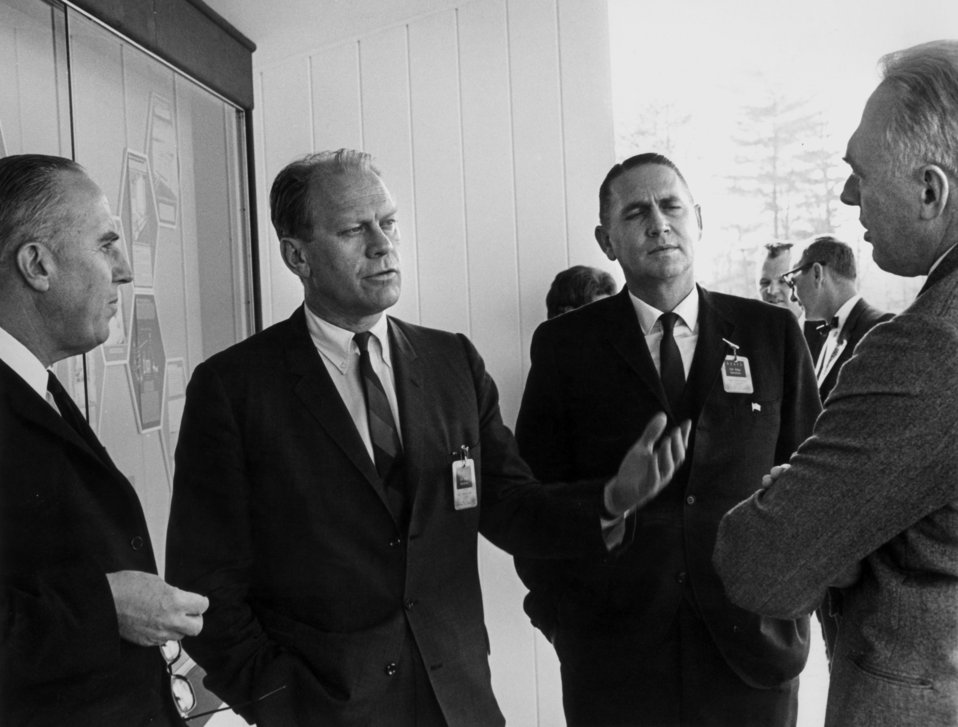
Visit by Congressman Gerald Ford Oak Ridge

65-0697-13 DOE photo Ed Westcott

Visit by Congressman Gerald Ford Oak Ridge Tennessee 2-9-1965